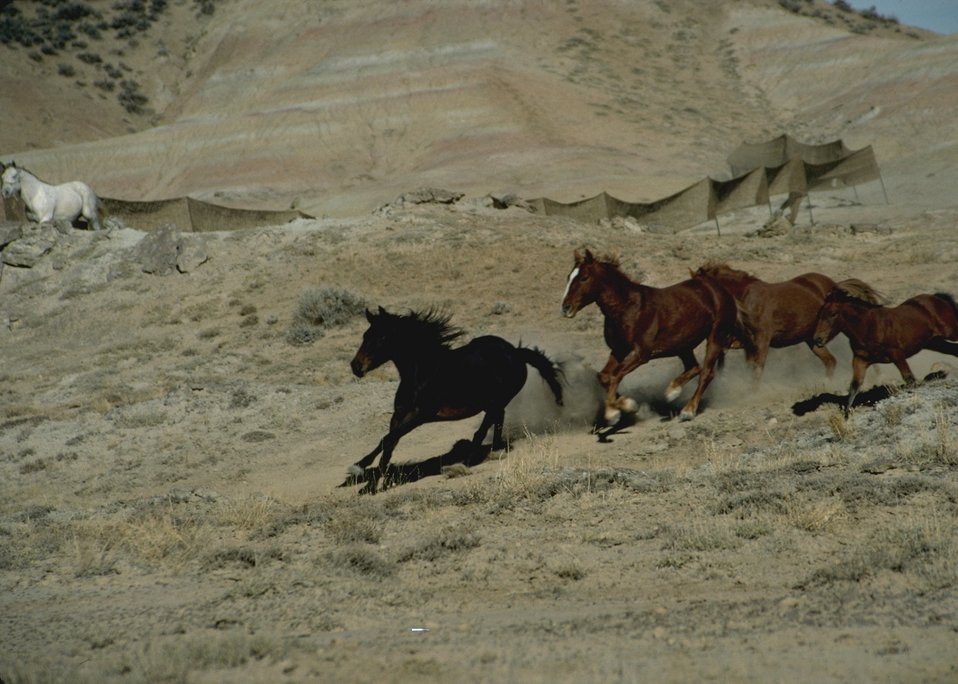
Wild horse round up.